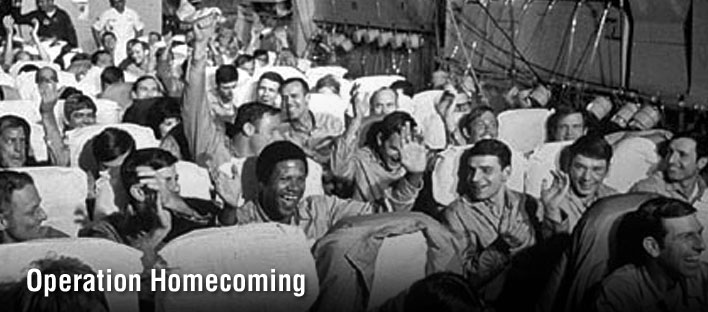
Operation Homecoming, history spotlight graphic, U.S.